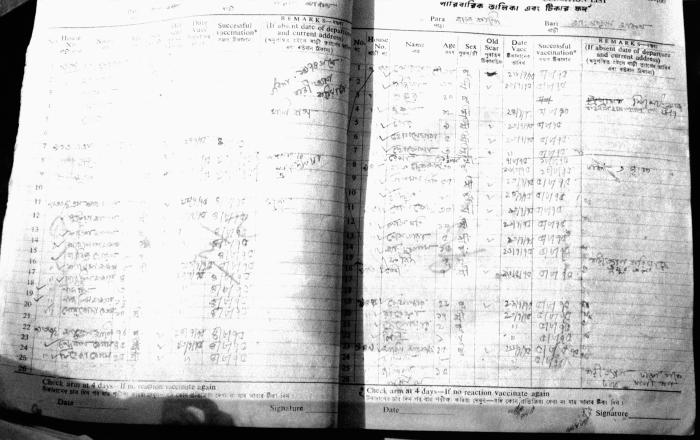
This was a detailed view of a 'Containment Book' page, listing data pertaining to those community homes that had been visited, and the finds uncovered. This book recorded all of the names of anyone living in, or near an infected home, and subsequently all those listed were vaccinated against smallpox. Those vaccinated were followed until a 'successful' vaccination was observed. The keeping of detailed records was extremely important, and is one of the hallmarks of properly practiced epidemiologic science. Smallpox cases that were uncovered had to be followed to a successful outcome, as well as anyone associate with close contact with any confirmed smallpox case. No matter even if it was a single case, all such disease was treated as an emergent situation, and once located were documented and tracked using methods such as 'mapping'.